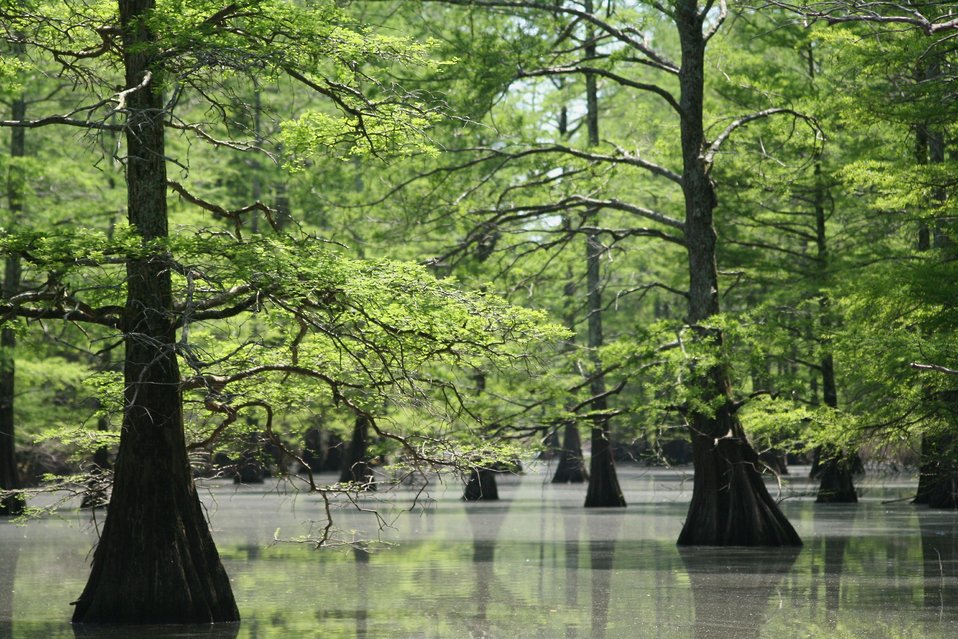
Gulf Coastal Plains and Ozarks LCC

Big Lake NWR bottoms